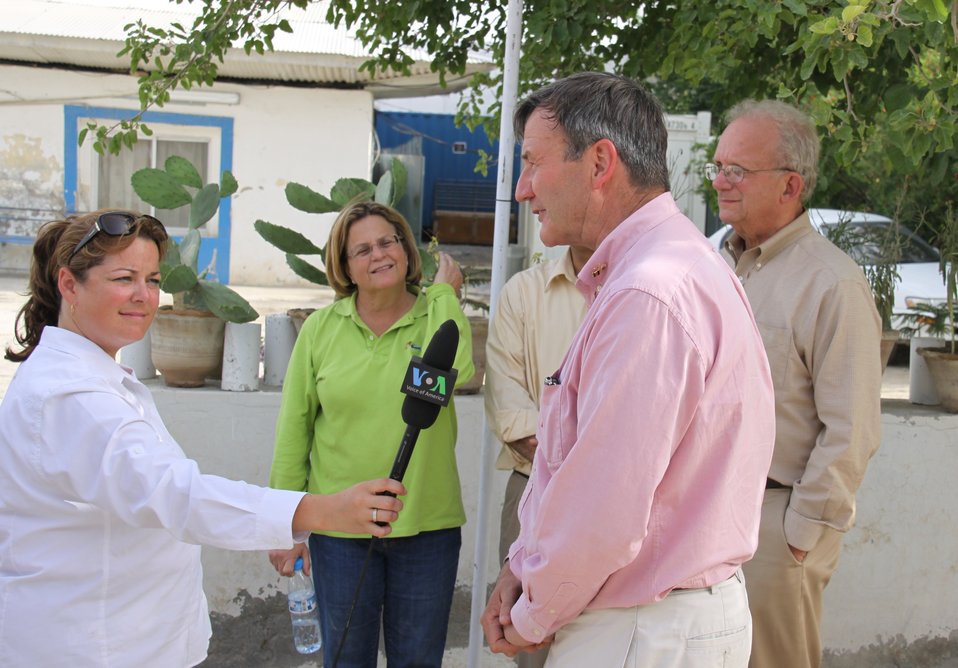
Meeting with Local Leaders in Kandahar